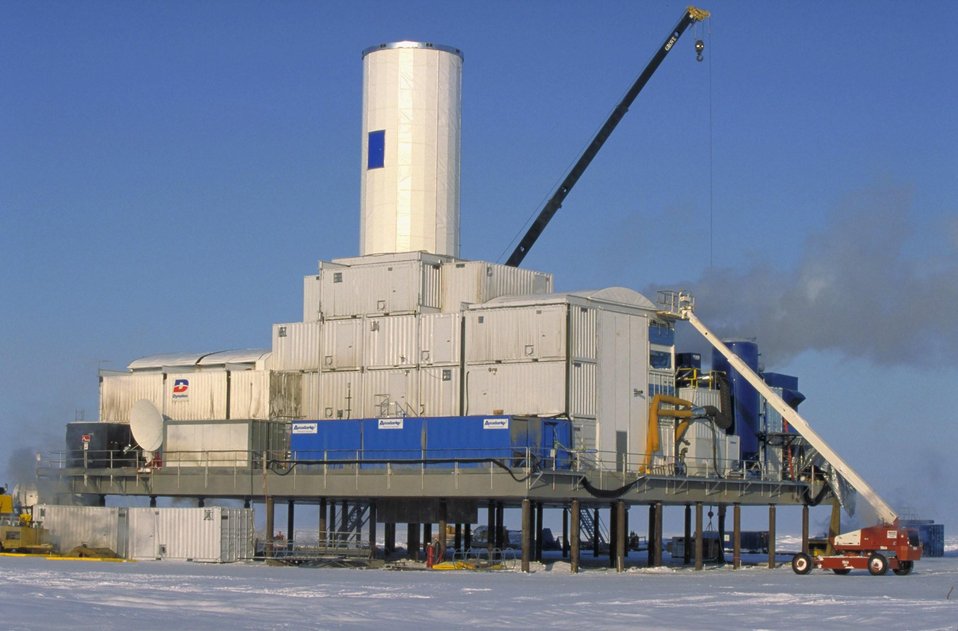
ARCTIC DRILLING PLATFORM ON ALASKA'S NORTH SLOPE.

THE ARCTIC DRILLING PLATFORM, DEVELOPED BY ANADARKO PETROLEUM CORPORATION OF HOUSTON TEXAS, WAS INSTALLED AT A SITE 60 MILES WEST OF DEADHORSE, ALASKA. THIS PLATFORM, A NEW CONCEPT FOR PROTECTING FRAGILE ECOSYSTEMS, IS BEING USED FOR THE FIRST TIME IN THE UNITED STATES TO DRILL FOR METHANE HYDRATES, A POTENTIALLY IMMENSE SOURCE OF ENERGY. THE PROJECT IS PART OF A PARTNERSHIP BETWEEN DOE, ANADARKO, MAUER TECHNOLOGY INC. AND NOBLE ENGINEERING AND DEVELOPMENT OF TEXAS.